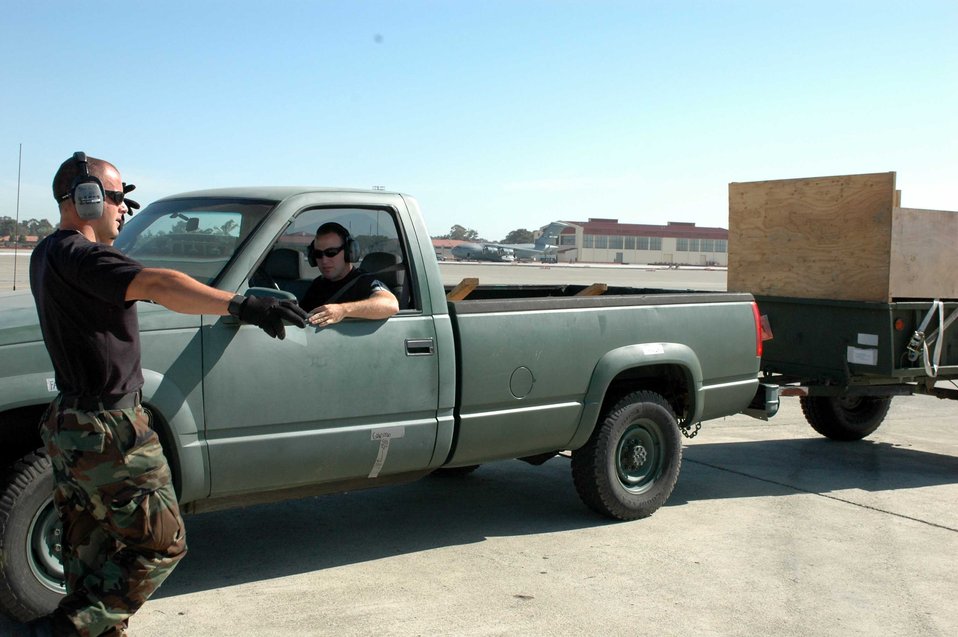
Loading up for Rodeo

Senior Airman Brian Harmon directs Staff Sgt. Cory Morris during a C-5 Galaxy engine running on (and) offload team practice June 11 at Travis Air Force Base, Calif. The practice is part of the 60th Aerial Port Squadron's preparations for the 2007 Air Mobility Command's Expeditionary Rodeo to be held in July at McChord AFB, Wash. The AMC readiness competition will test competitors' abilities in all aspects of their career fields.